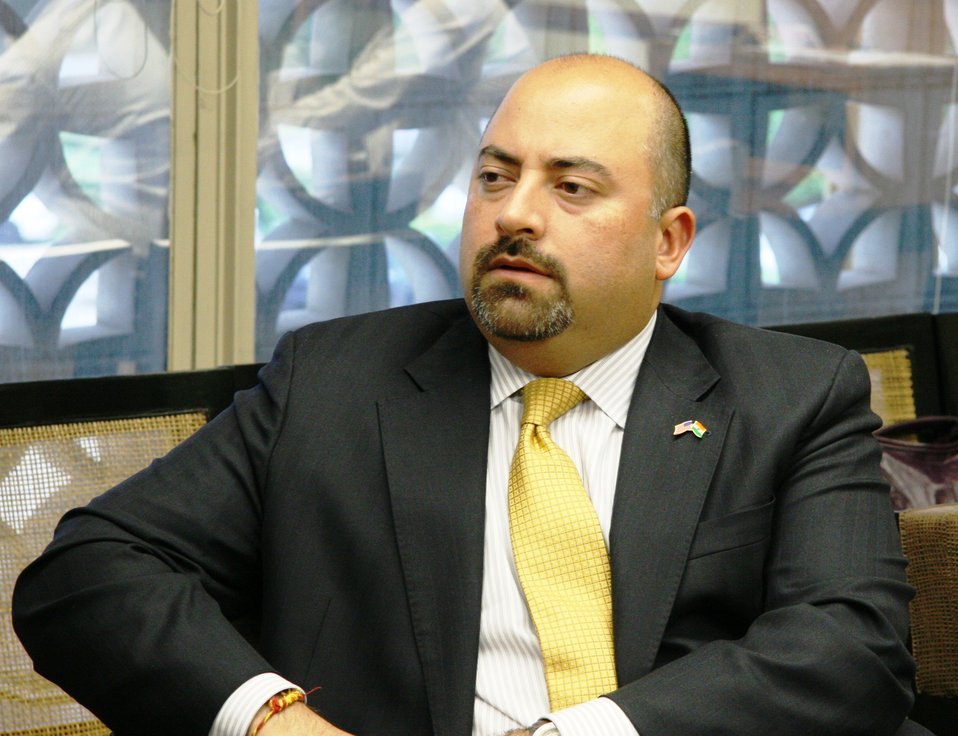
ADAS Keshap Participates in a Roundtable

U.S. Acting Deputy Assistant Secretary of State for South and Central Asian Affairs participates in a roundtable with civil society leaders who combat trafficking in persons (TIP) across India at the U.S. Embassy New Delhi in India on July 21, 2010.